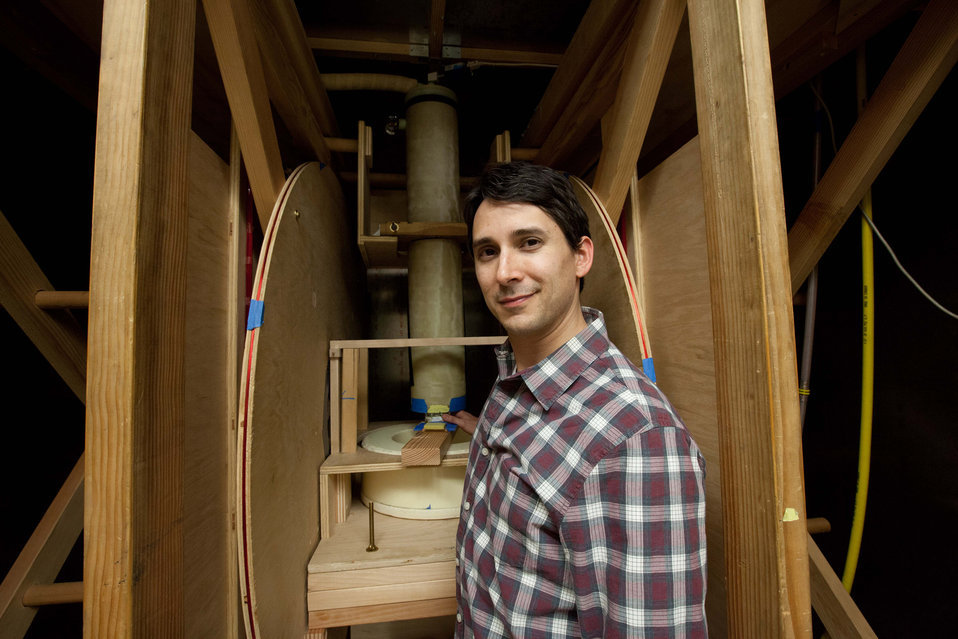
NIST physicist Michael Boss positions a prototype NIST phantom (a calibration tool) in an ultralow-field magnetic resonance imaging scanner at the University of California at Berkeley. NIST phantoms are intended to help assess and validate this experimental imaging method, which offers advantages in diagnosing and monitoring of certain medical conditions.